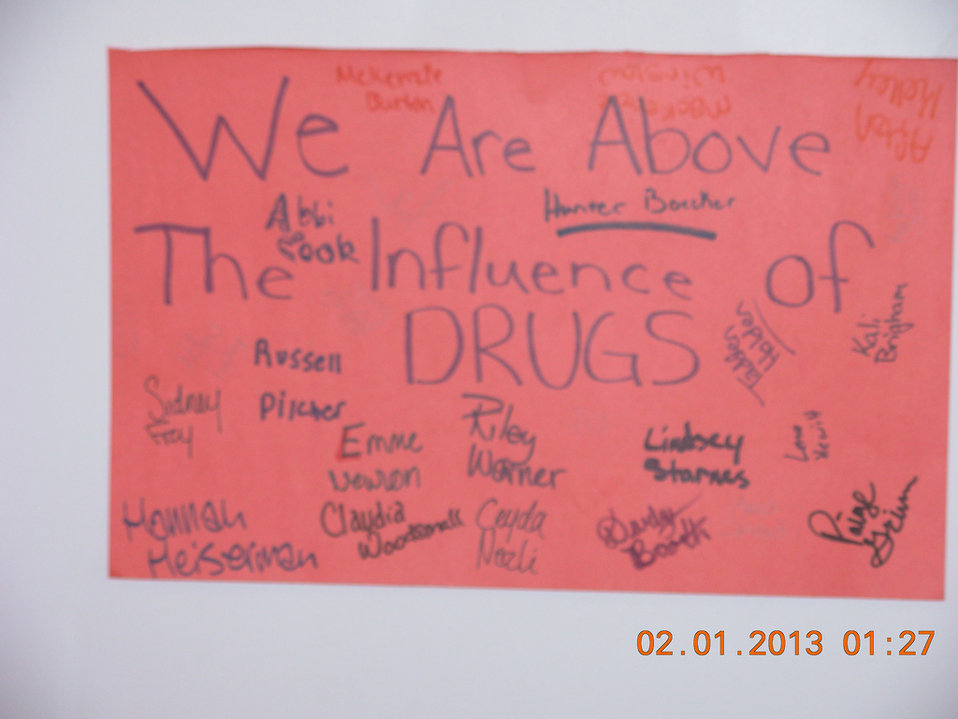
Iowa's SAFE Coalition, NDFW 2013

Van Buren County, IA. SAFE Coalition high school student run groups fighting issues of drug, alcohol, and tobacco abuse during NDFW 2013.